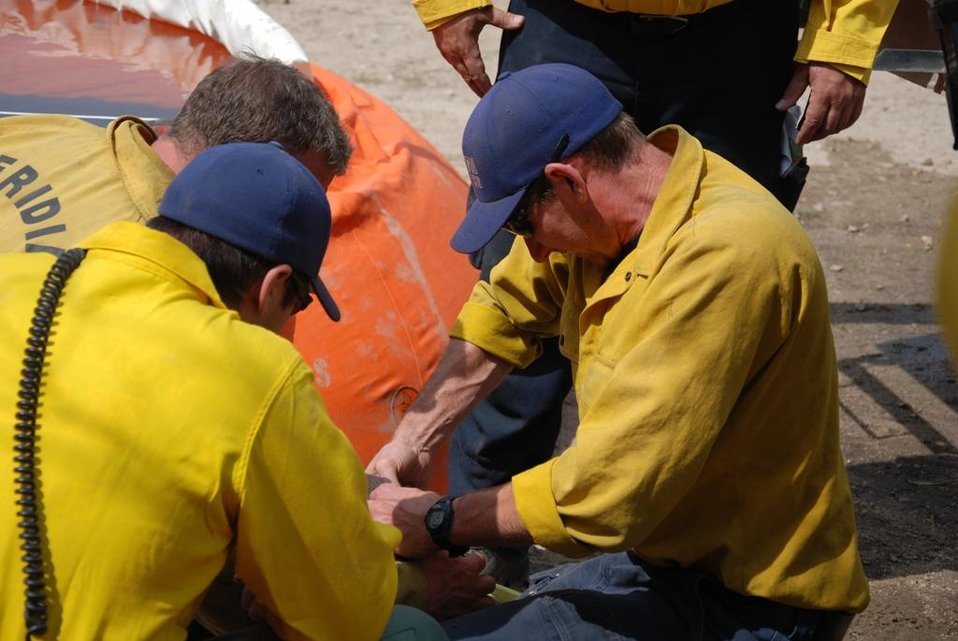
Fire crews secure a connection on a portable water tank at the Little Queens Fire Incident Command Post (ICP). The Little Queens Fire in Boise National Forest near Atlanta, ID began on Aug. 17, 2013 is under investigation. The fire has consumed approximately 20,956 acres and is 10% contained.